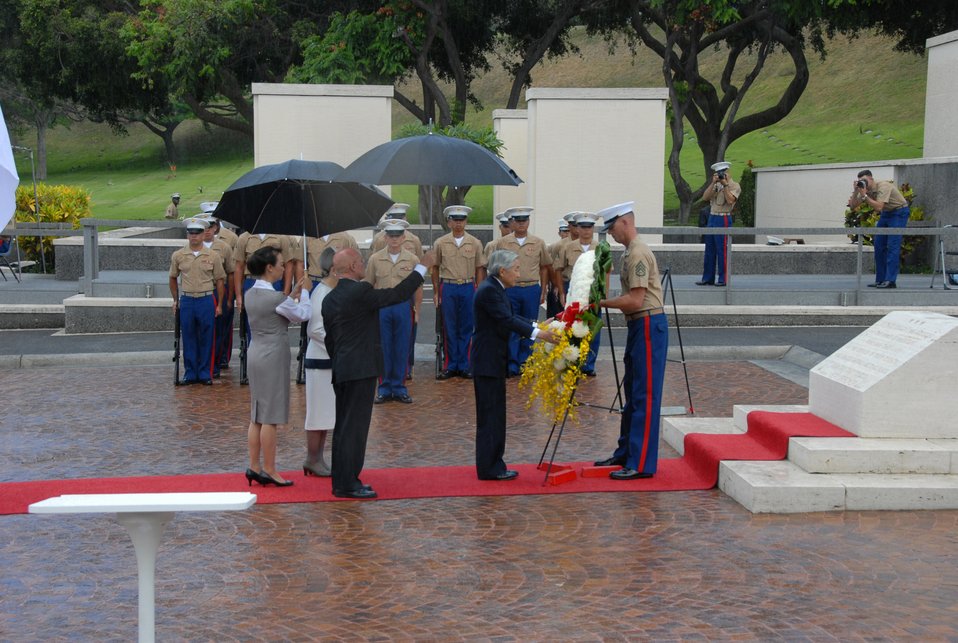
Japanese royalty honors America's fallen

Emperor of Japan Akihito lays a chrysanthemum wreath at the National Memorial Cemetery of the Pacific at Punchbowl Crater, Hawaii, July 15. Emperor Akihito and Empress Michiko paid tribute to those interred at the cemetery.